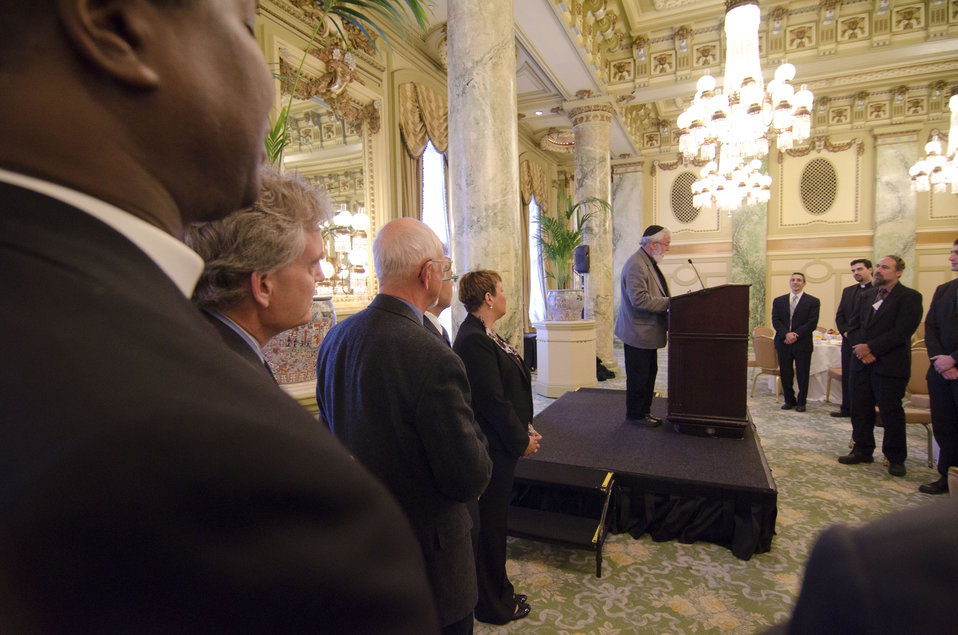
2011-05-05 NRCCCPrayerBreakfast 076

Rabbi Fred Scherlinder Dobb, Adat Shalom Congregation, gives remarks at the National Religious Coalition on Creation Care Prayer Breakfast